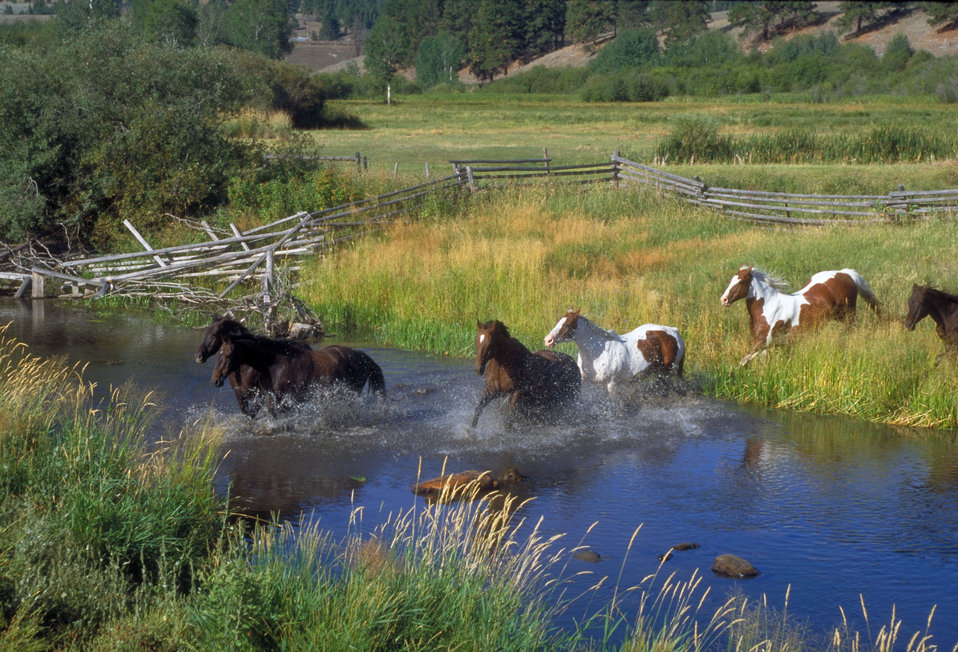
Horses run thru the creek on the McDonald Ranch in Niarada, Montana in September 1999.